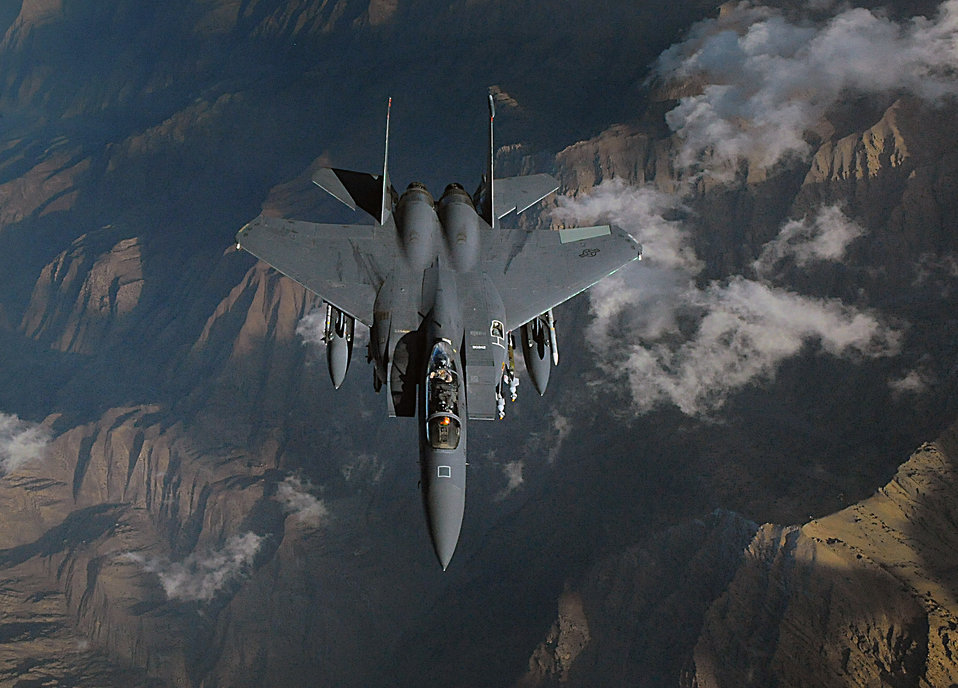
Nov. 23 airpower summary: F-15Es provide armed overwatch

An F-15E Strike Eagle in-flight over Afghanistan providing overwatch in support of Operation Enduring Freedom. The Strike Eagle is assigned to the 391st Expeditionary Fighter Squadron, Bagram Airfield, Afghanistan.